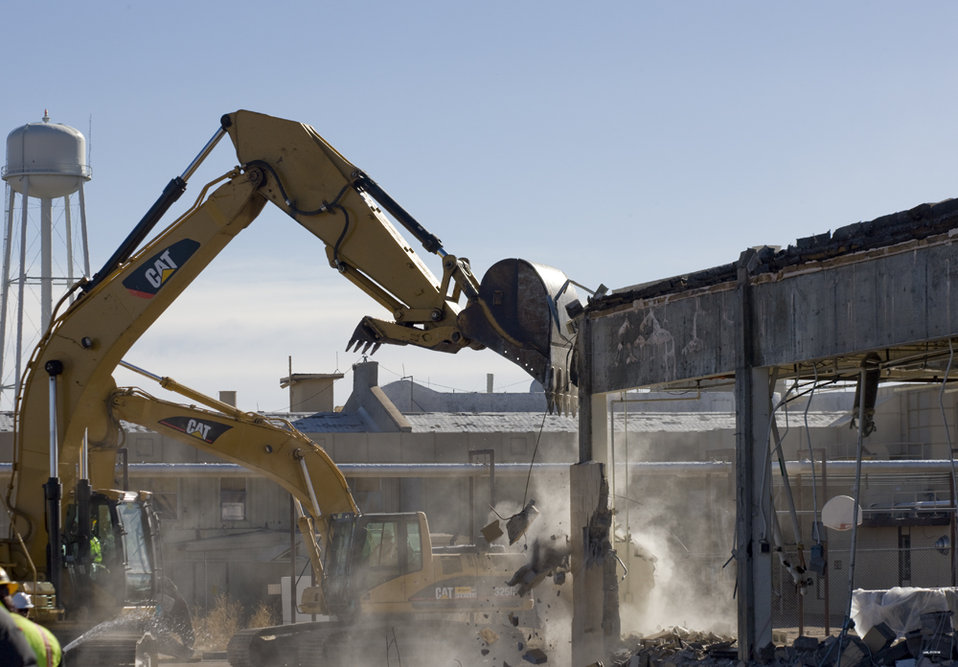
Building Demolition at Los Alamos National Laboratory Technical Area 21